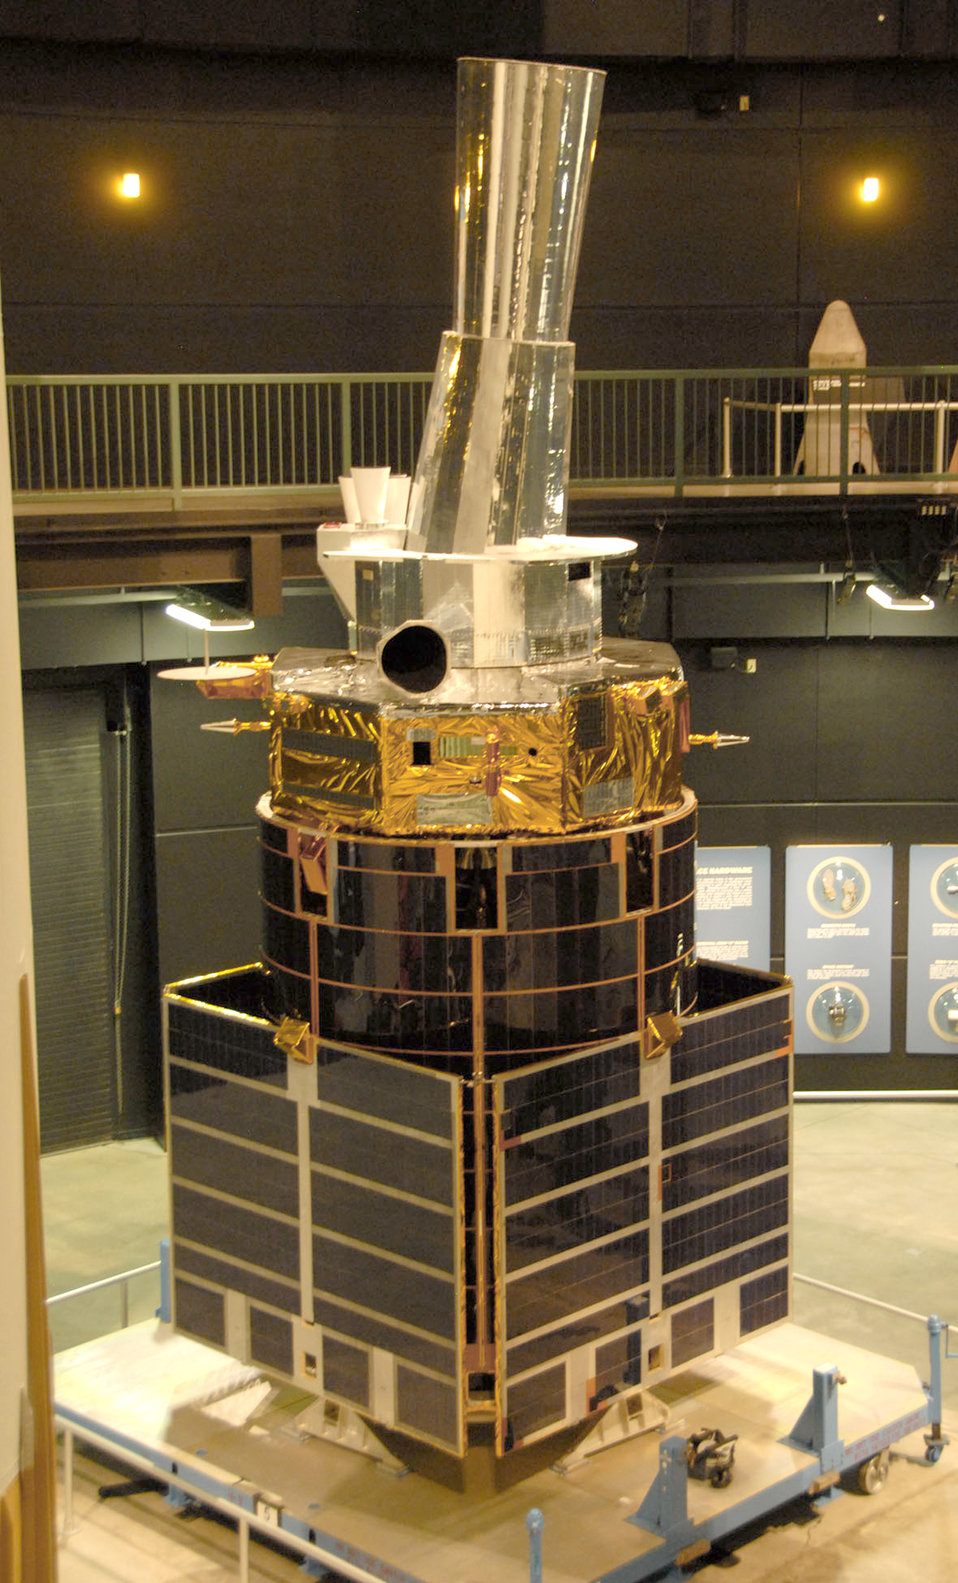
DSP

A structural test vehicle from the Defense Support Program stands on display in the National Museum of the U.S. Air Force's Missile & Space Gallery in Dayton, Ohio.